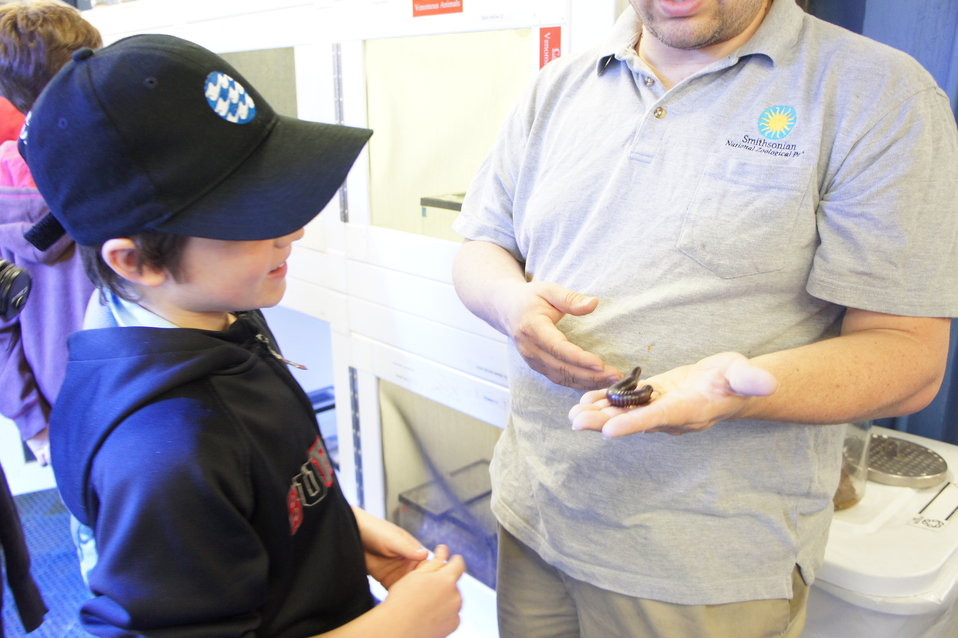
'Save the Nautilus' co-founder visits Smithsonian National Zoo

Lucas Utsch examines a millipede.